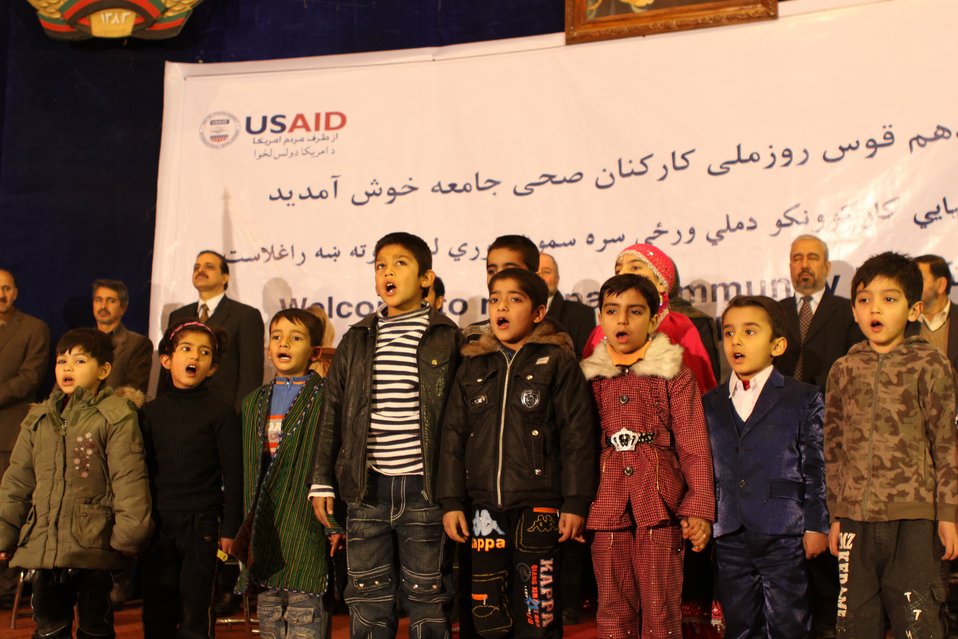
Community Health Workers Celebrated

Kabul, Afghanistan | December 5, 2010 — In support of the United Nations designated International Volunteer Day for Economic and Social Development, Afghanistan’s Ministry of Public Health celebrated its annual Community Health Worker Day today. Acting Minister of Public Health Dr. Suraya Dalil, USAID Senior Deputy Mission Director Robert Hellyer, other government officials, and international donors joined in recognizing the critical contribution of community health workers in Afghanistan and encouraging them to continue their voluntary support to their communities.
The event praised the contributions of the more than 22,000 volunteers throughout the country who deliver community level health-education, counseling, and services out of village health posts located in private homes. The Ministry of Public Health envisioned that community-based healthcare programs will actively encourage communities and families to adopt healthy lifestyles and behaviors, and provide families access to high quality and socially acceptable preventative medicine and life-saving services.
“We have 22,000 community health workers in Afghanistan that are able to implement the basic and standard medicines. They all have been trained through a job description,” said Minister Dalil. Addressing the health workers, she added, “I am proud and feel powerful that I have people like you.”
USAID-funded health projects collaborate closely with the Ministry of Public Health to improve the health and nutritional status of Afghans, provide quality primary healthcare, and promote healthy behaviors at the community and household-levels. USAID supported the training of more than 9,000 of the volunteer community health workers currently working in Afghanistan.
“On behalf of the American people, I congratulate the Community Health Workers for their diligence to gain the skills and knowledge necessary to serve their communities in this important role,” said USAID Senior Deputy Mission Director Hellyer. “USAID strongly supports community based health care and believes that quality community-based health services are essential to reaching Afghanistan’s Millennium Development Goals.”
To support the Basic Package of Health Services, USAID assisted in developing the community health worker training manual, helped train community health worker supervisors and master-trainers, facilitated in-service training, and produced and developed reporting tools, job aids, and education materials.